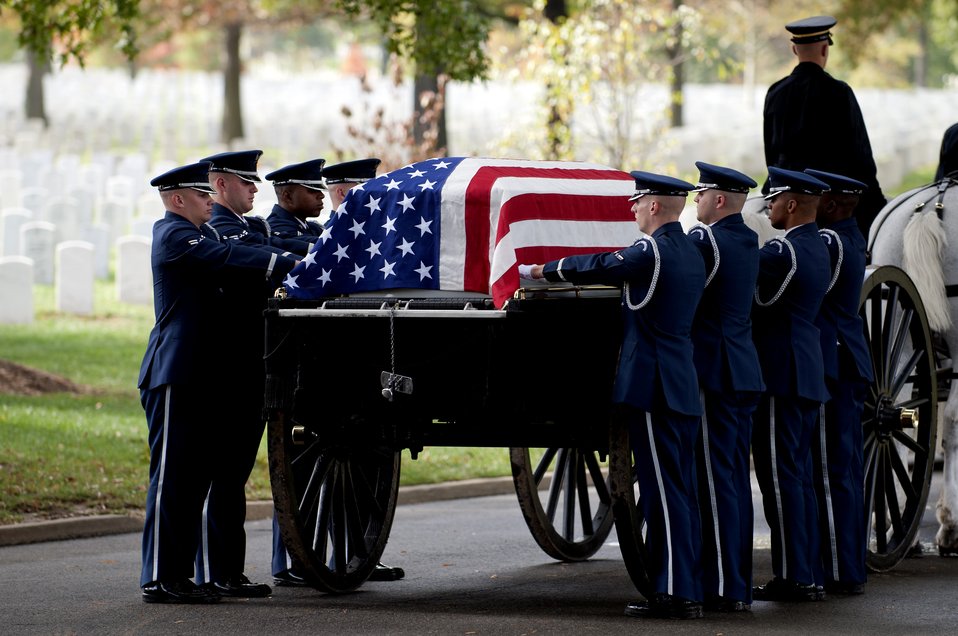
Full military honors

The U.S.Air Force Honor Guard's Body Bearers team prepares to remove the remains of Col. Wendell Keller, of Fargo, N.D., and Capt.Virgil K. Meroney, of Fayetteville, Ark., from the caisson and carry them to their final resting place at the Arlington National Cemetery Oct. 20, 2012. March 1, 1969, Keller and Meroney were the crew of an F-4D Phantom II aircraft that went down while carrying out a night time strike mission in Khammouan Province, Laos. Nearby aircrews reported seeing the aircraft hit by enemy fire. No parachutes were seen after the aircraft was hit. Heavy enemy presence in the area prevented recovery efforts. Between 1994 to 2011, the